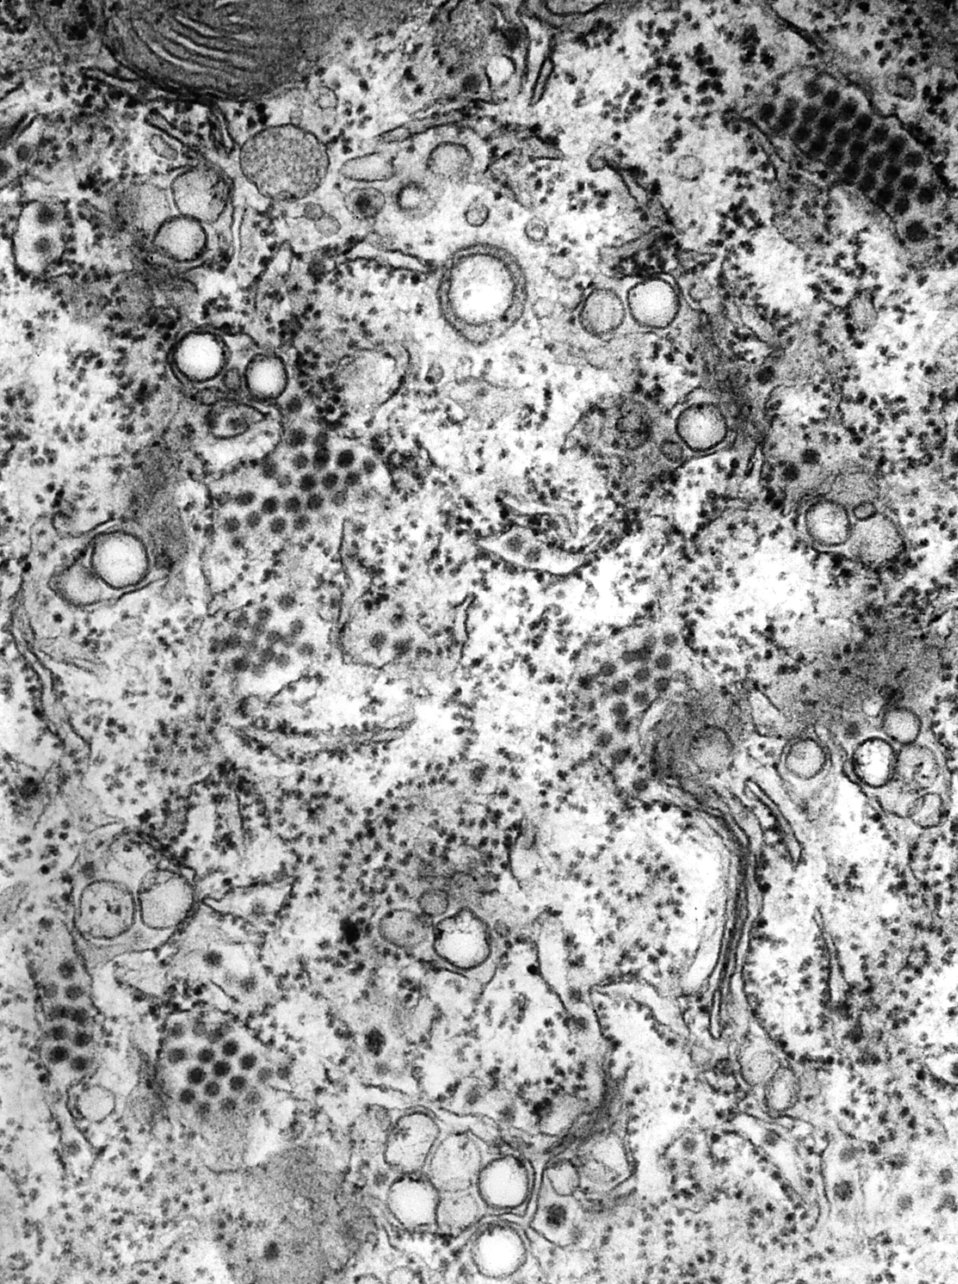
This negatively-stained transmission electron micrograph (TEM) revealed the presence of numerous St. Louis encephalitis virions that were contained inside a central nervous system tissue sample. St. Louis encephalitis virus is a member of the genus Flavivirus, family Flaviviridae. Other similar diseases are West Nile virus (WNV), eastern equine encephalitis (EEE), western equine encephalitis (WEE), and La Crosse encephalitis.